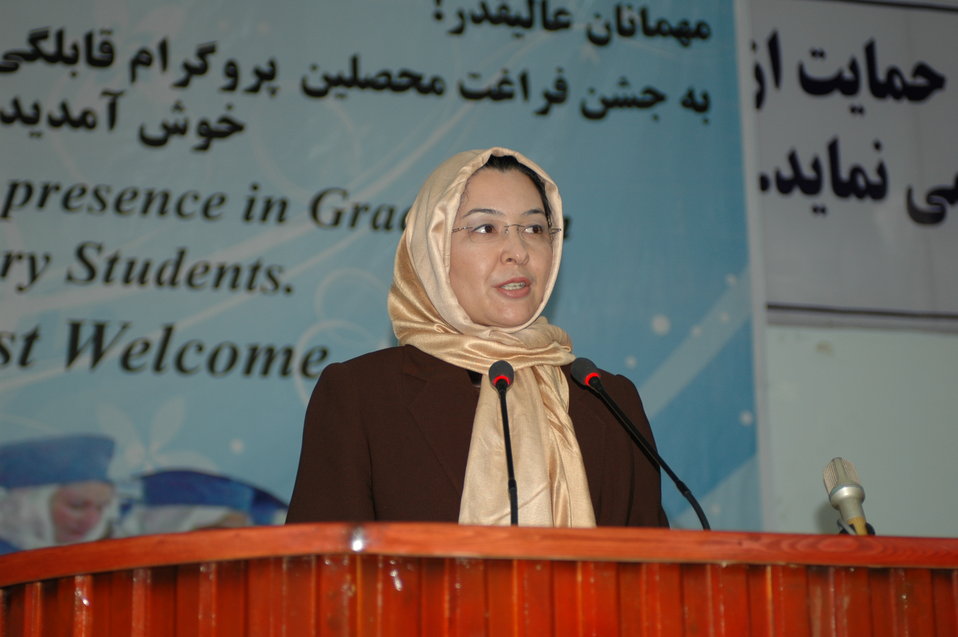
Midwifery3